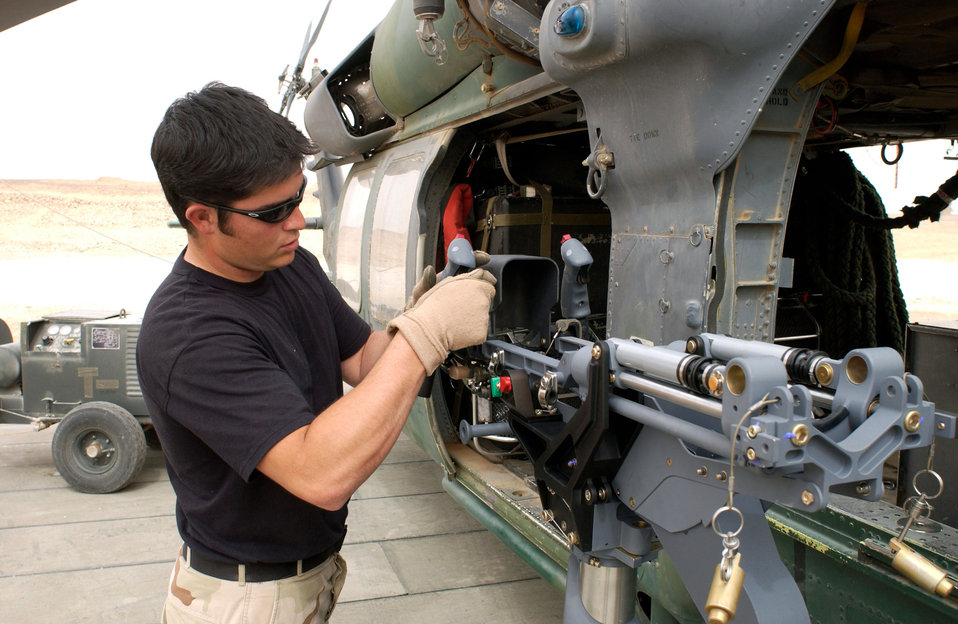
Modification

OPERATION IRAQI FREEDOM -- A member of the 66th Expeditionary Rescue Squadron is working on a time compliance weapon modifications on a H-60 helicopter, April 7. Forward deployed in an undisclosed location, the 410th Air Expeditionary Wing is responsible for critical sorties flown in support of Operation Iraqi Freedom.